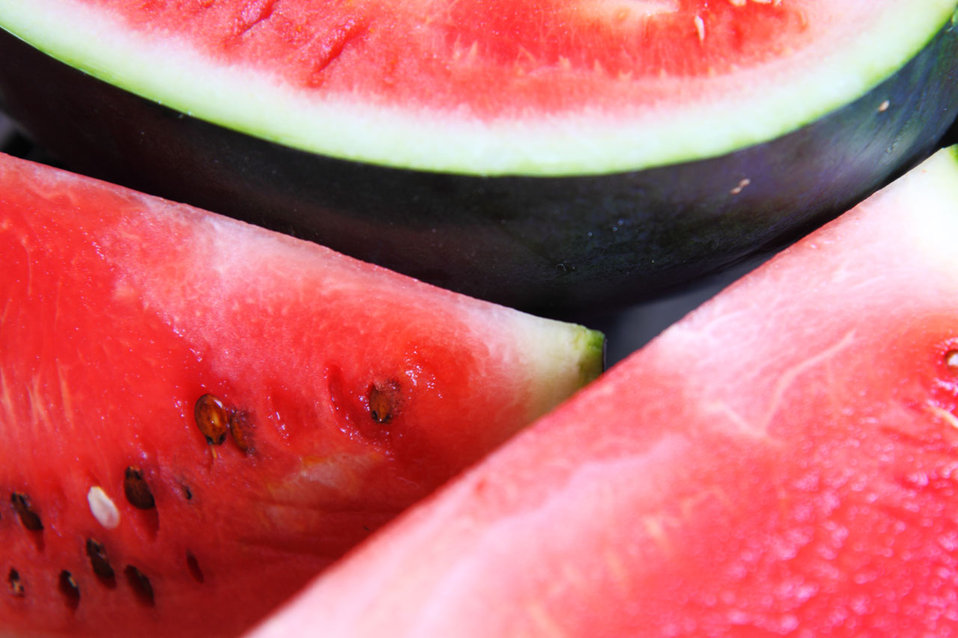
Watermelon slices.